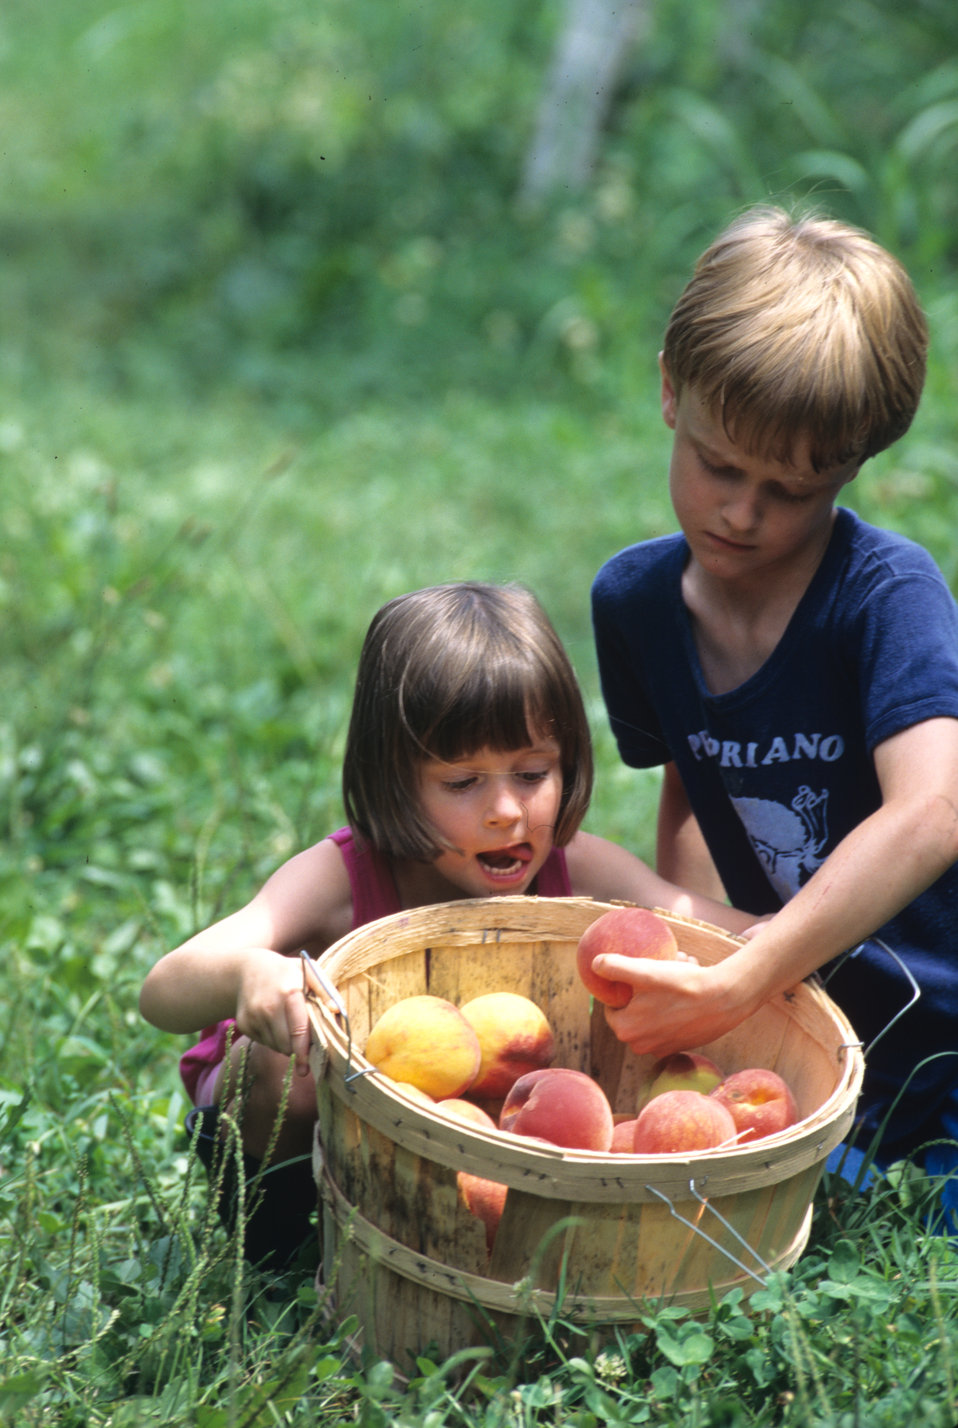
Children look over a basket of peaches picked from the William Manor Peach Orchard in Morrisville, VA in mid August 1995.